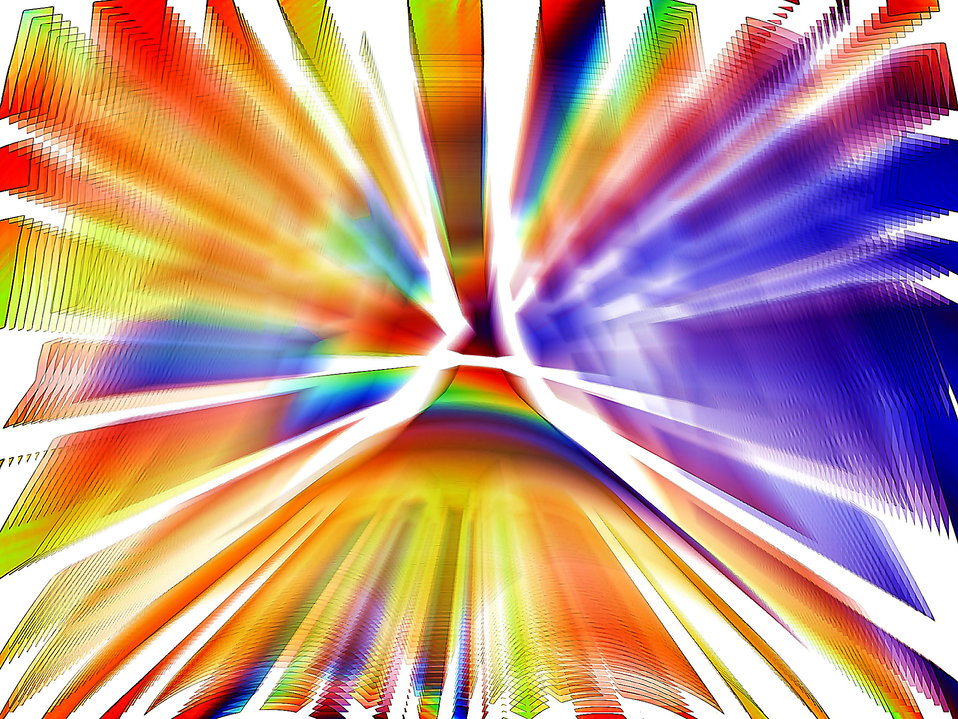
Luna zoom

Background.